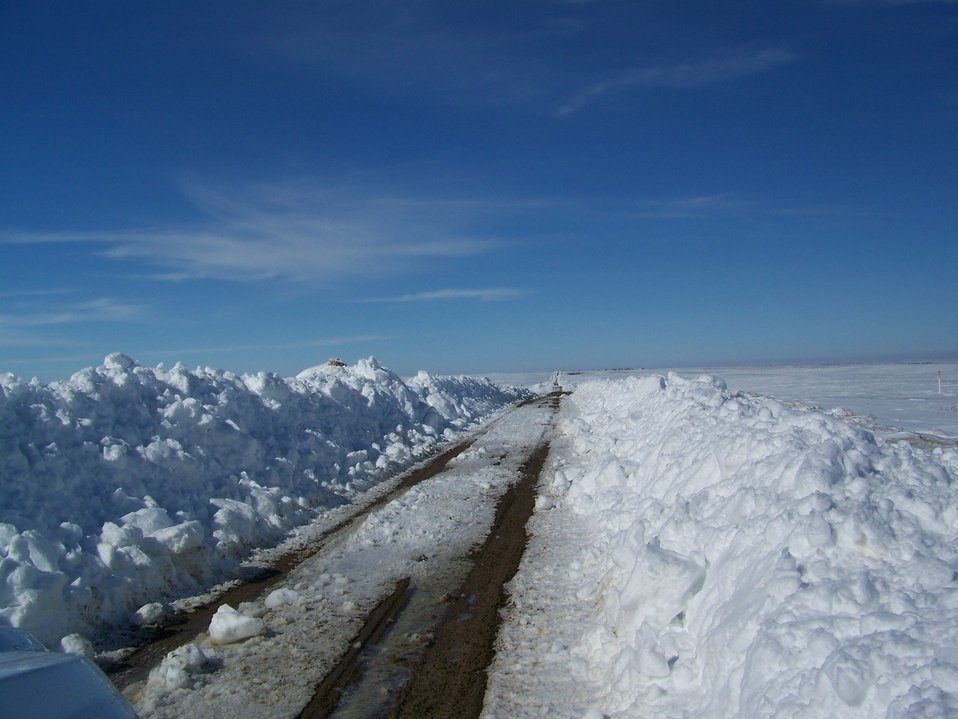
Record Snowfall - Bowdoin NWR

Winter on Bowdoin NWR